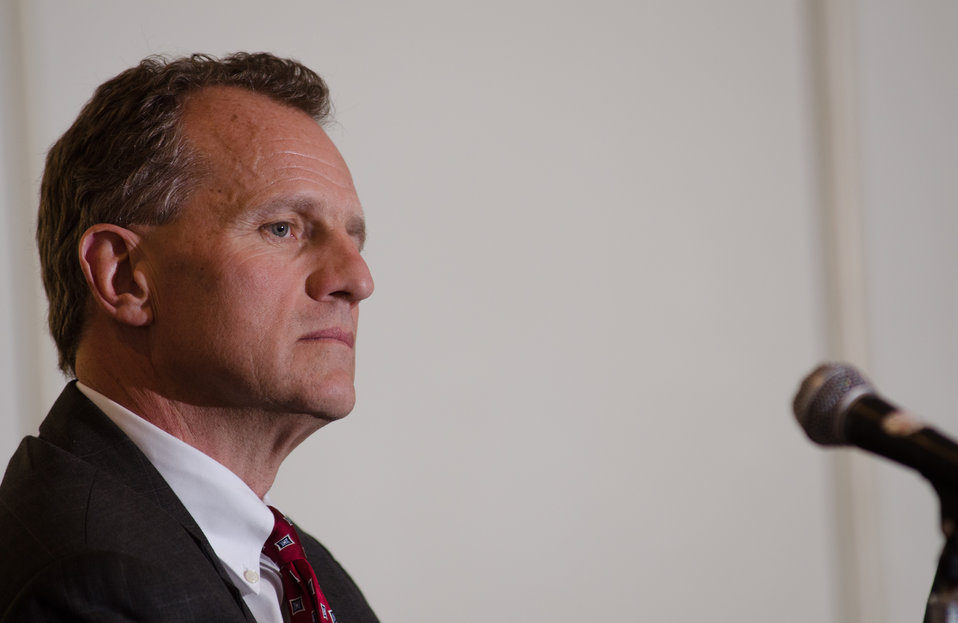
U.S. Soybean Export Council CEO Jim Sutter spoke on “The Impact of Sustainability Regulations on Trade Flows,” during the 2013 Agricultural Outlook Forum, held at the Crystal Gateway Marriott Hotel, Arlington, Virginia on Thursday, Feb. 21, 2013. This annual Forum brings together producers, policymakers, and business, government, and industry leaders to meet, exchange ideas, and discuss timely agriculture issues.